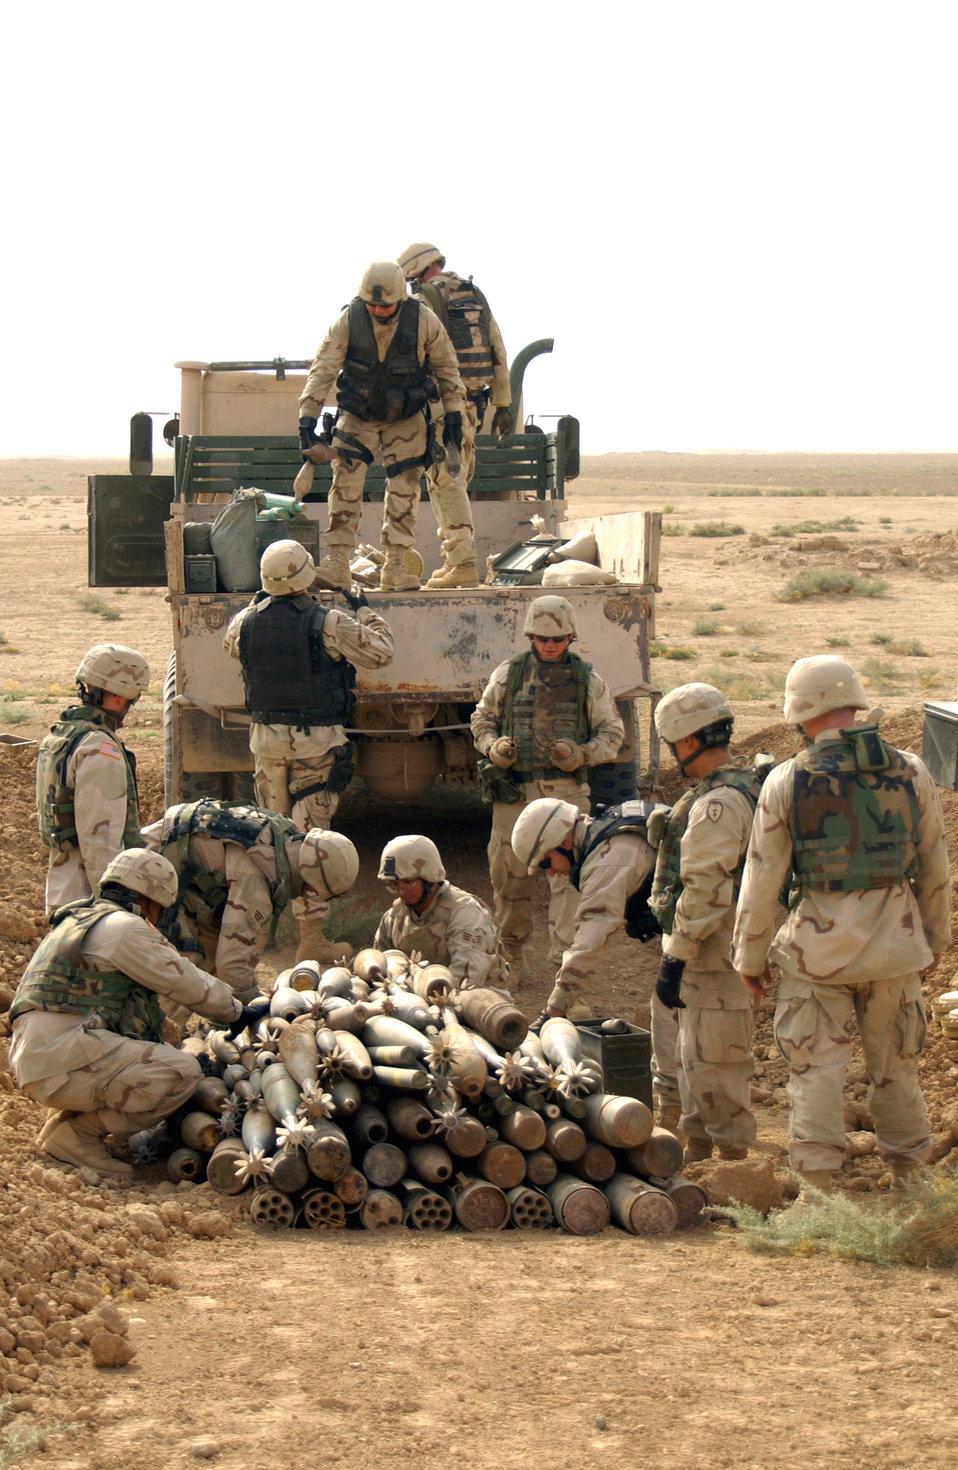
Operation Iraqi Freedom

KIRKUK AIR BASE, Iraq -- Army engineers and explosive ordnance disposal Airmen unload a truck of munitions. Munitions were found throughout the Kirkuk region and destroyed by Airmen of the 506th Civil Engineer Squadron here.